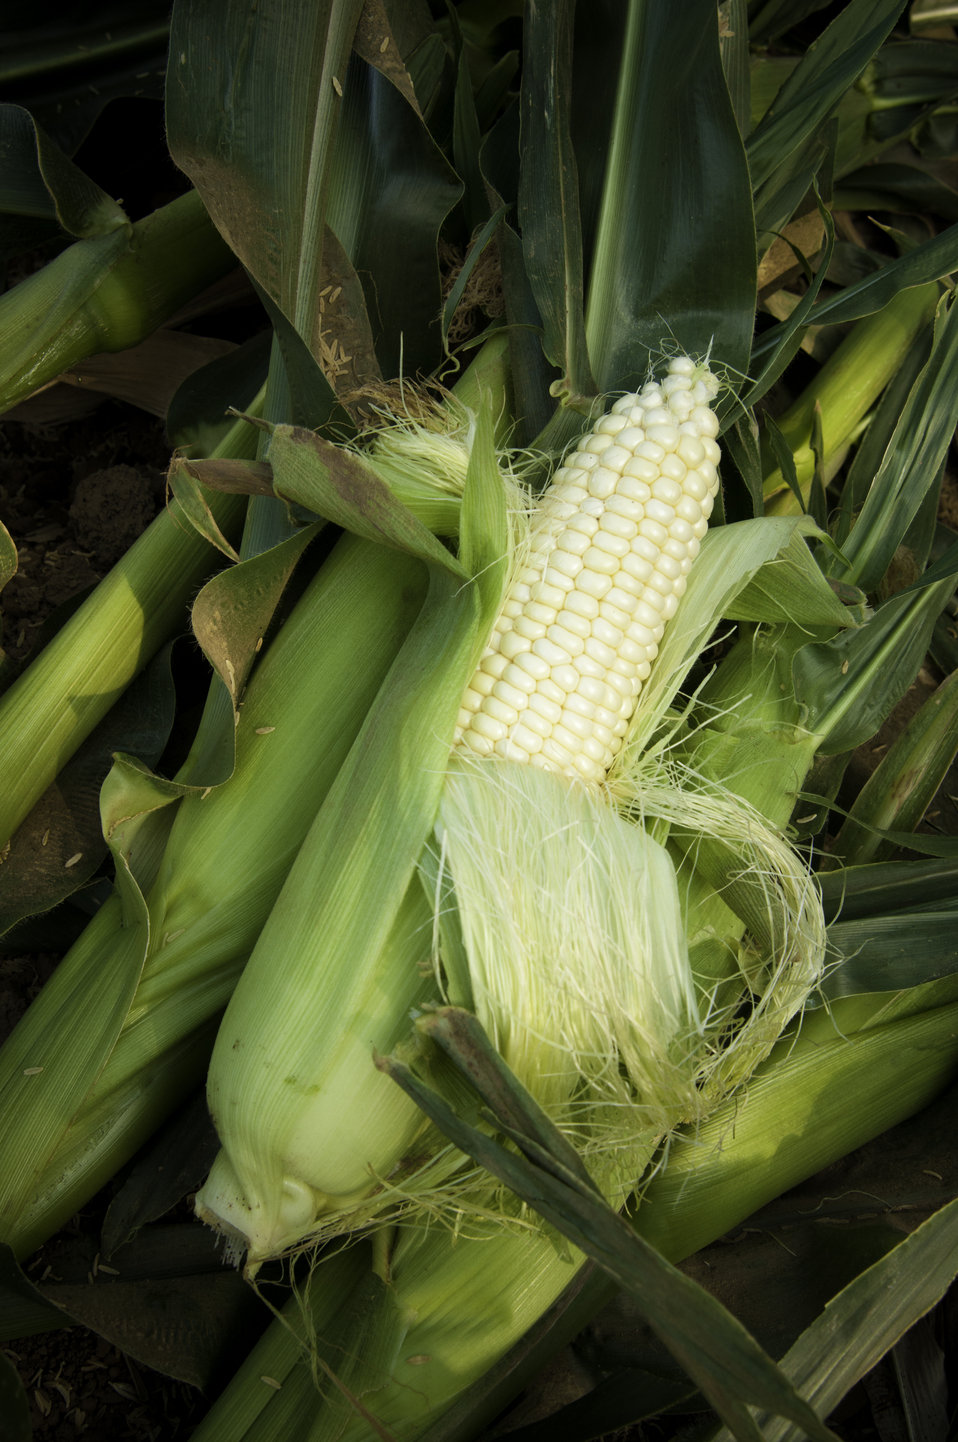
Ripe white corn is ready for harvesting on Uesugi Farms in Gilroy, CA on Wednesday, Aug. 28, 2013.